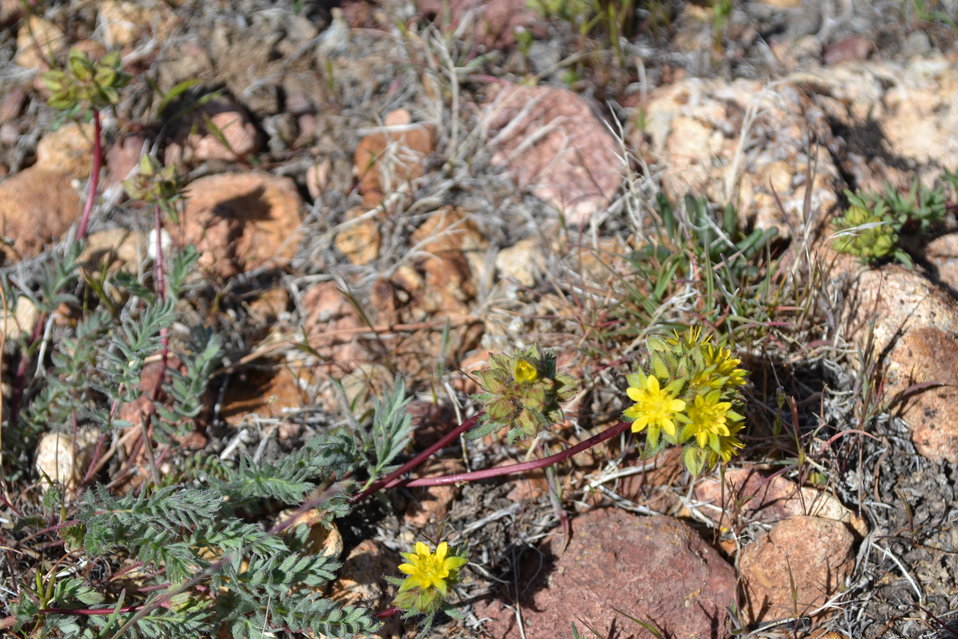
Webber Ivesia

Photo Credit: Sarah Kulpla/USFWS Webber ivesia (Ivesia webberi) is a member of the rose family. It is a low spreading, perennial forb approximately ten inches across with greenish-gray foliage and dark red, wiry stems. The leaves are mostly clustered around the base of the stems, with four to eight pairs of leaflets crowded at the tip, and generally covered with long, silky grayish hairs. Flowering typically begins in May and extends through June. The small bright yellow flowers occur in groups. The whole plant becomes reddish-tinged late in the season. This plant occurs in Washoe and Douglas Counties in Nevada and in Lassen, Plumas, and Sierra Counties in California.